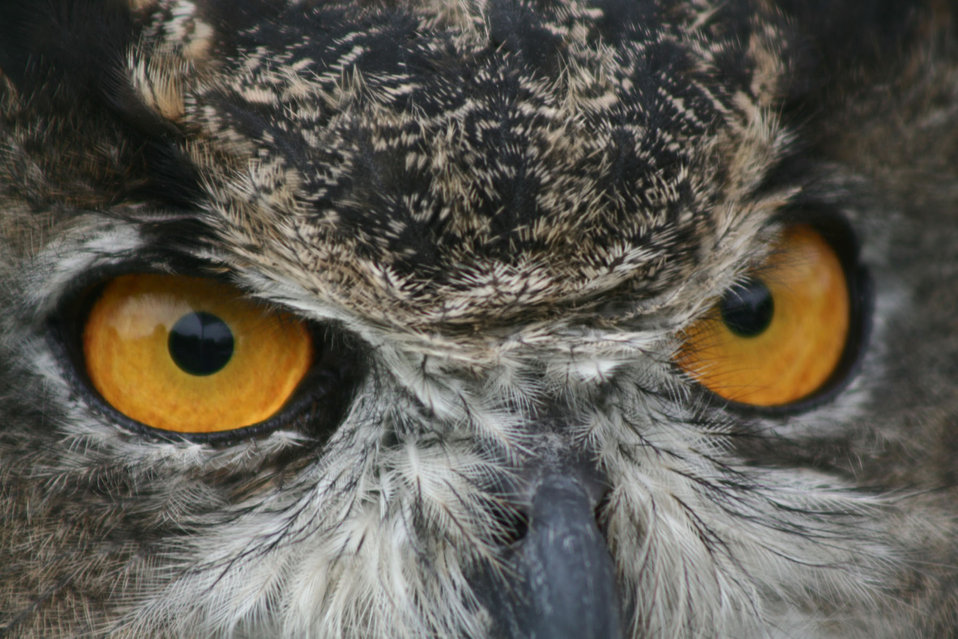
Photo of the Week - Great Horned Owl at John Heinz National Wildlife Refuge, PA

Photo of the Week - 12/17/10

Great horned owl at John Heinz National Wildlife Refuge in Philadelphia, Pennsylvania.